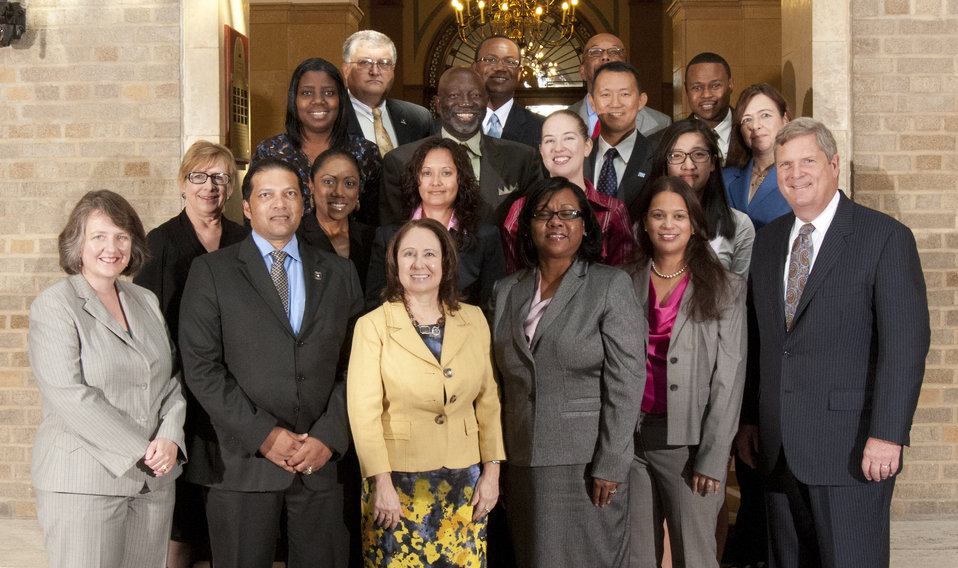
Agriculture Secretary Tom Vilsack and Deputy Agriculture Secretary Kathleen Merrigan with Honor Award Group for the U.S. Department of Agriculture (USDA) Diversity Inclusion Team, Office of Human Resource Management (OHRM) on the patio of USDA in Washington, D.C. on Wednesday, Sept. 12, 2012. The USDA Diversity and Inclusion Team provided exceptional leadership, innovation, resourcefulness, and strategic direction in building partnerships and recruiting a diverse and talented workforce to transform USDA into a model work place.